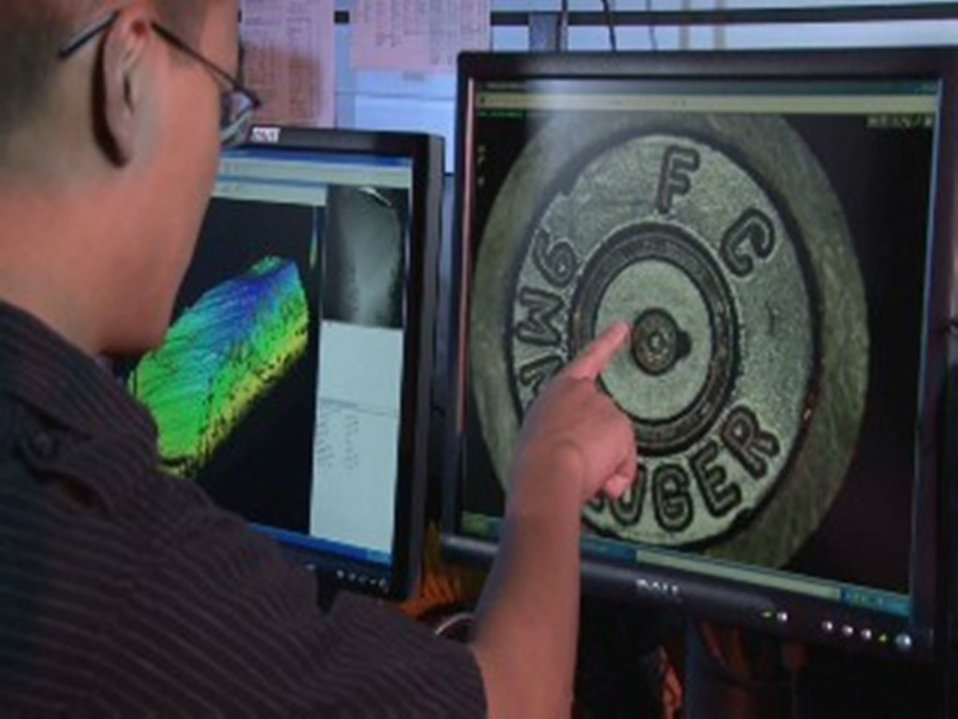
Cartridge Case Mark

NIST engineer Alan Zheng points to the firing pin impression, one of three marks impressed on the surface of a cartridge case when a gun is fired. The marks, also known as signatures, can act like fingerprints to identify a specific firearm and are key elements in NIST's standard casing, Standard Reference Material 2461.